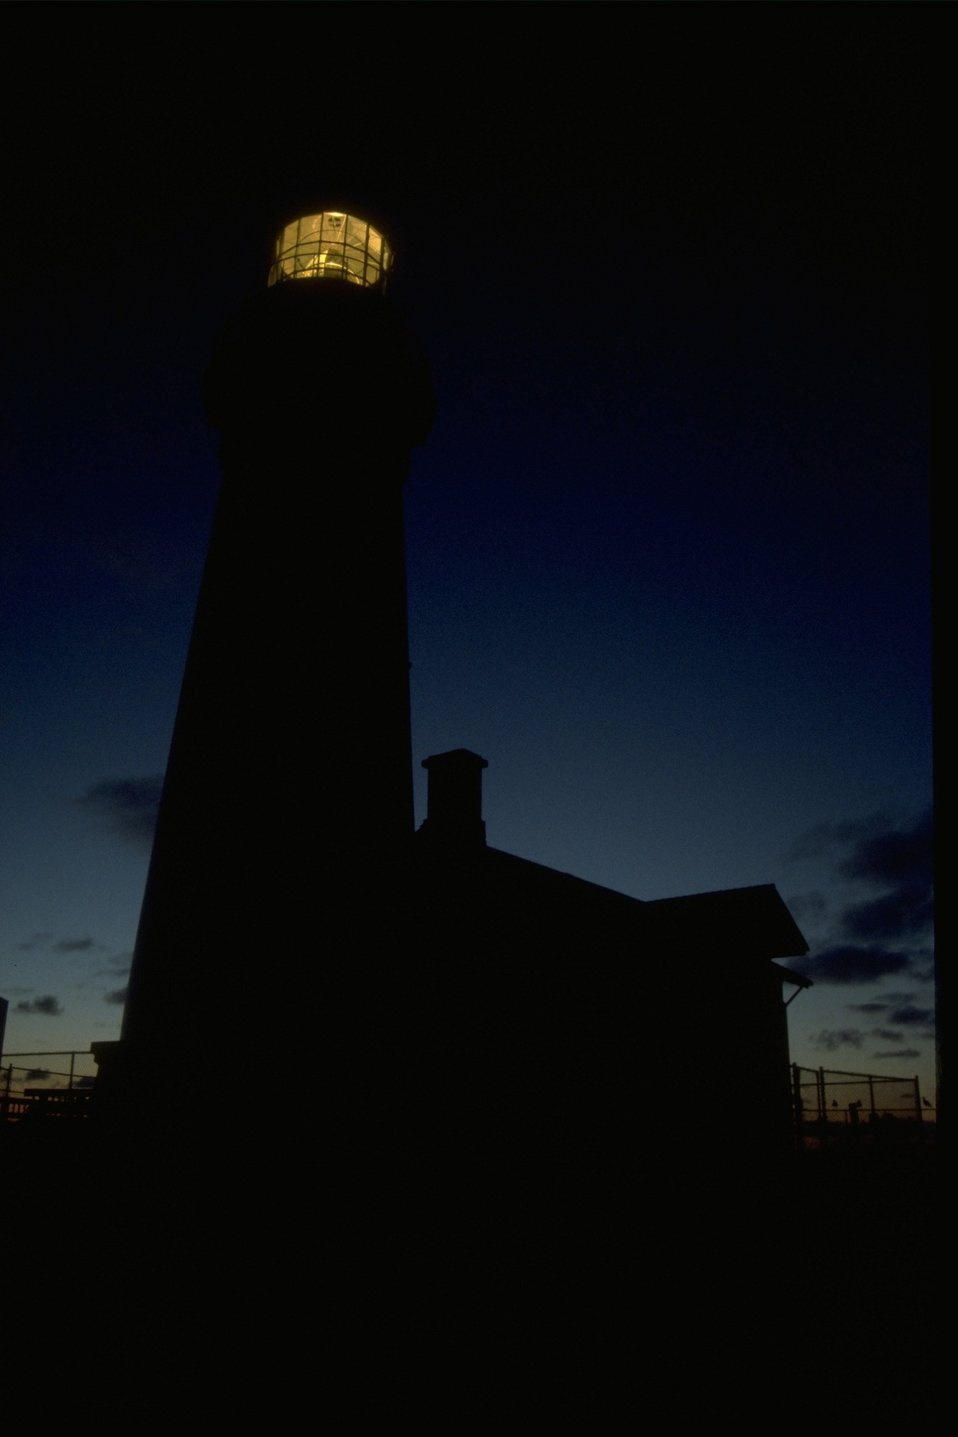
Yaquina Head Lighthouse at dusk.